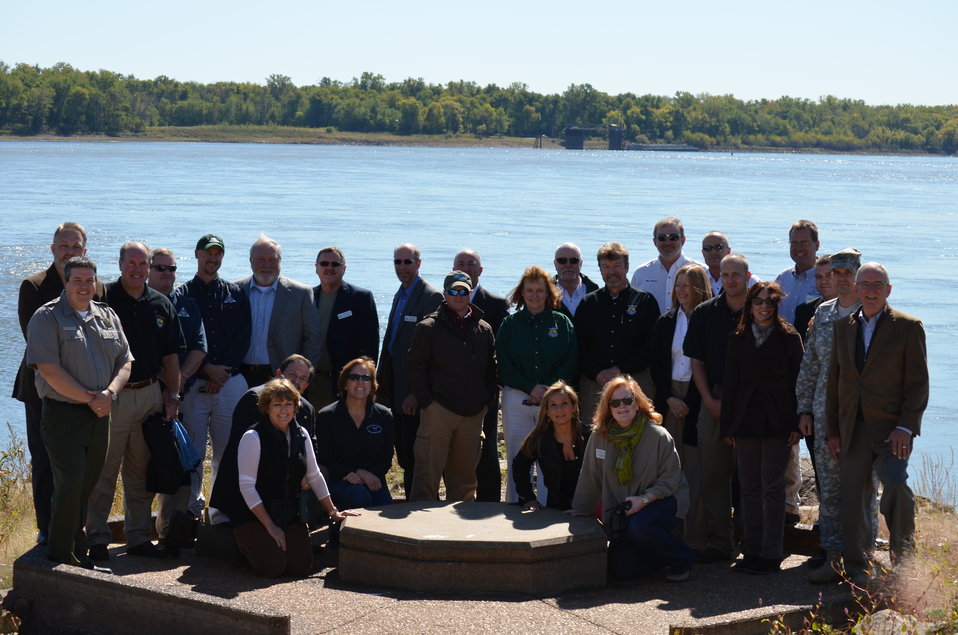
Proud partners in conservation

Missouri/Mississippi Rivers Confluence Conservation Partnership with federal, state and non-governmental representatives at Edward 'Ted' and Pat Jones Confluence Point State Park. USFWS/Ashley Spratt